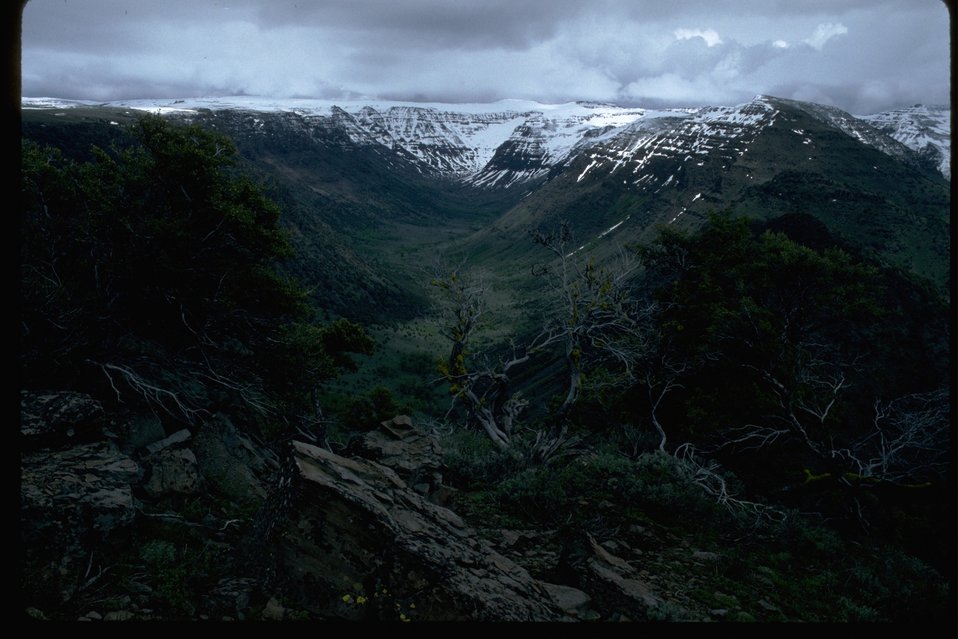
Early spring snow in the high Country above Big Indian Gorge.